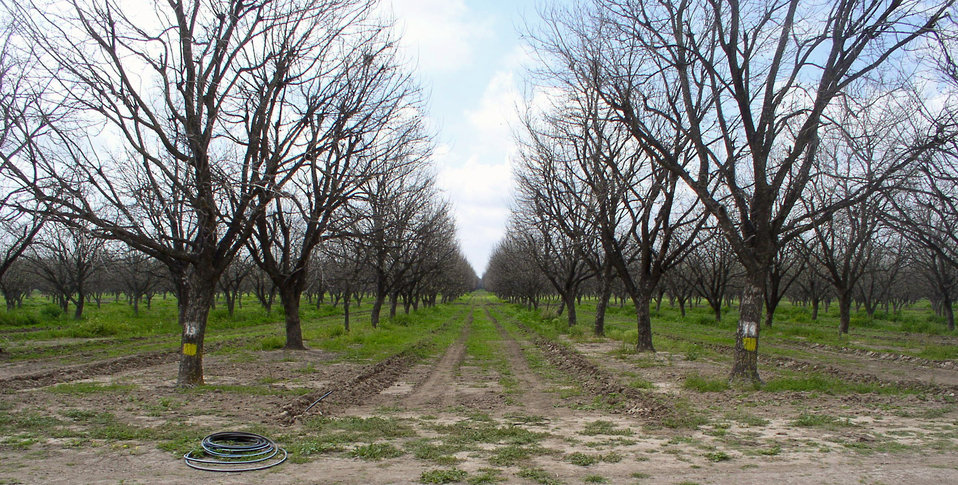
The first completed burial of micro irrigation drip tube in one of the pecan orchards at Arrowhead Farms of Crystal City, TX, is accomplished on Tuesday, March 24, 2010. Twin furrows 10 inches deep contain drip irrigation tube buried in each, between rows of pecan trees, during the installation of a micro irrigation system. Water emitters positioned every 35 inches emit 1 gallon of water per hour over a 24-hour period. This allows the water to soak downward and promote a strong and healthy root system for the trees. This will dramatically retard the weed growth and the need for labor and cost of herbicides. In all, about 25,000 feet of drip tubing was used. The 719-acre farm with 10,000 trees, features some orchards with underground micro irrigation system that feeds water to the roots of 4,380 pecan trees on 146 acres. Mr. Mohammad said, “USDA (U.S. Department of Agriculture) was essential to my business and trees surviving the recent exceptional drought. The trees were stress free thanks to underground micro-irrigation. This is essential to the future growth of Texas agriculture and good for America.” U.S. Department of Agriculture’s (USDA) Environmental Quality Initiative Program (EQIP) awarded Mr. Mohammad a $130,000 grant in 2008. He provided $26,000 for the balance of the $156,000 total cost to install a 146-acre underground micro-irrigation for 4,380 trees.